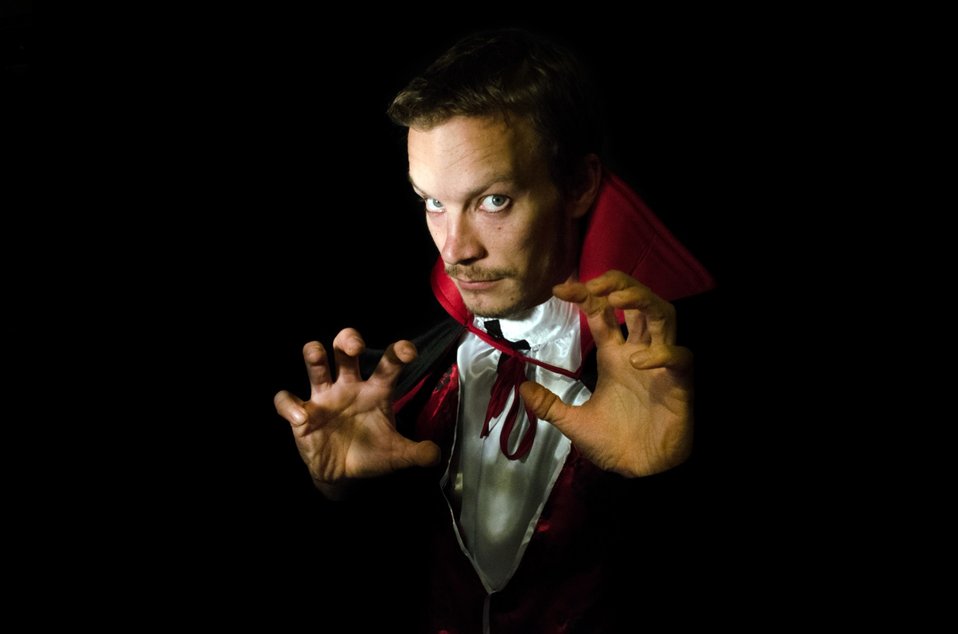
Halloween vampire.